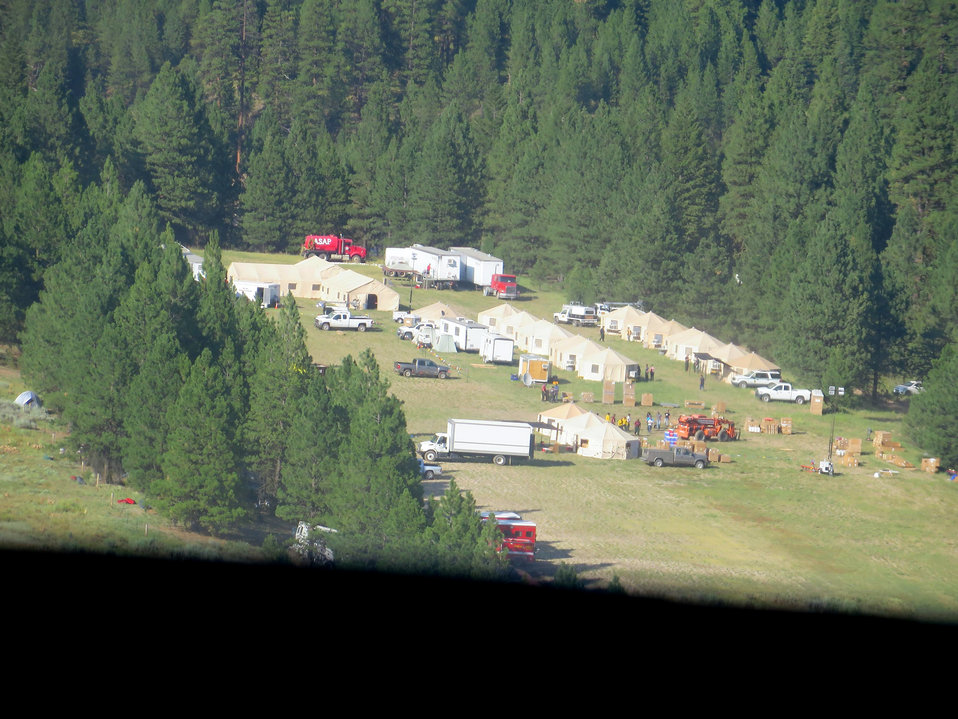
Fire camp on Warm Springs Airstrip in Boise National Forest set up to fight the Ridge Fire. The Ridge Fire in the Boise National Forest, ID near Lowman, ID began on Jul. 16, 2013 by lightning and has consumed approximately 5,143 acres. The Ridge Fire is approximately 20% contained.